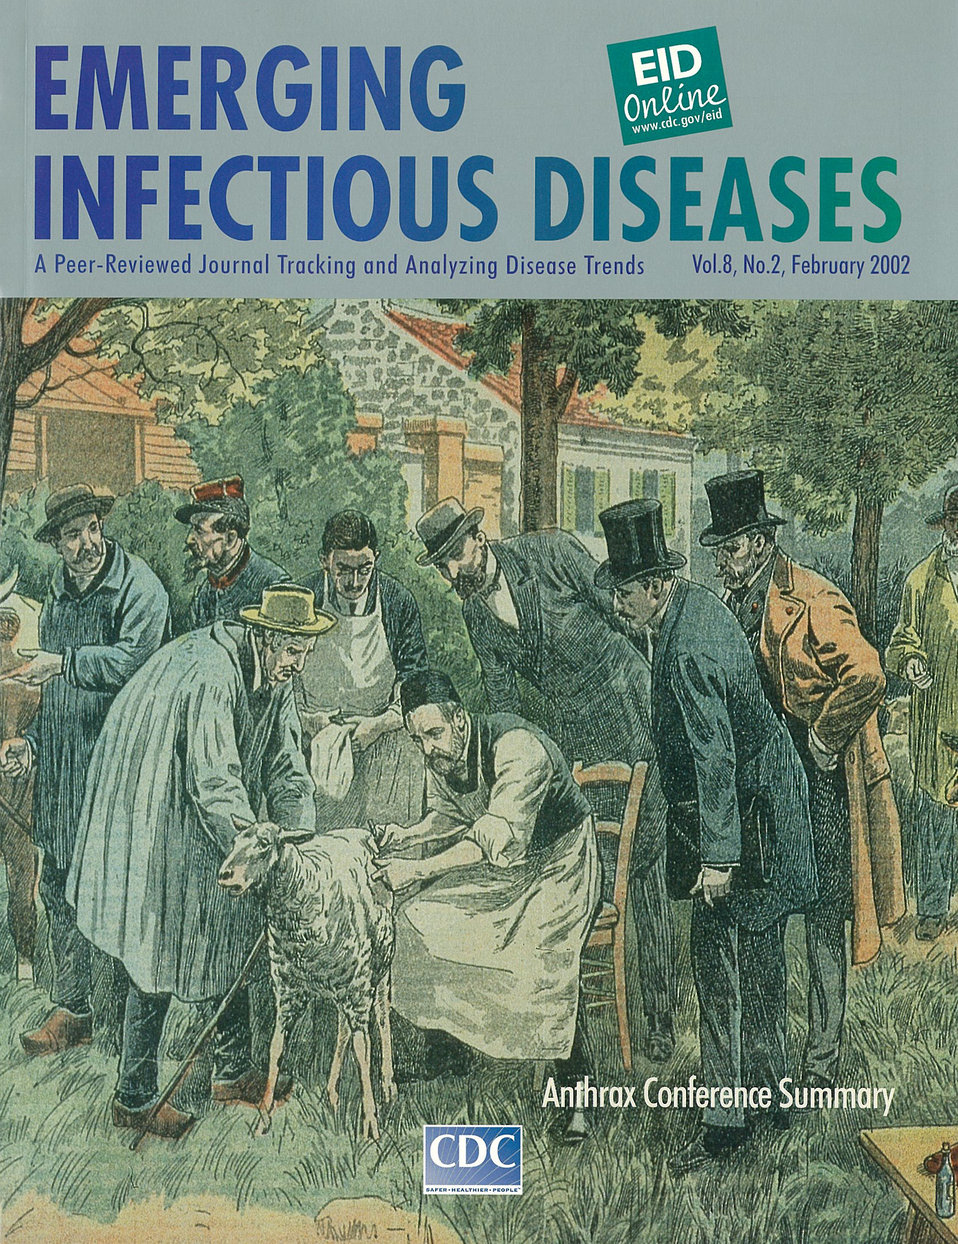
Emerging Infectious Diseases (EID) cover artwork for Volume 8, Number 2, February 2002 issue.